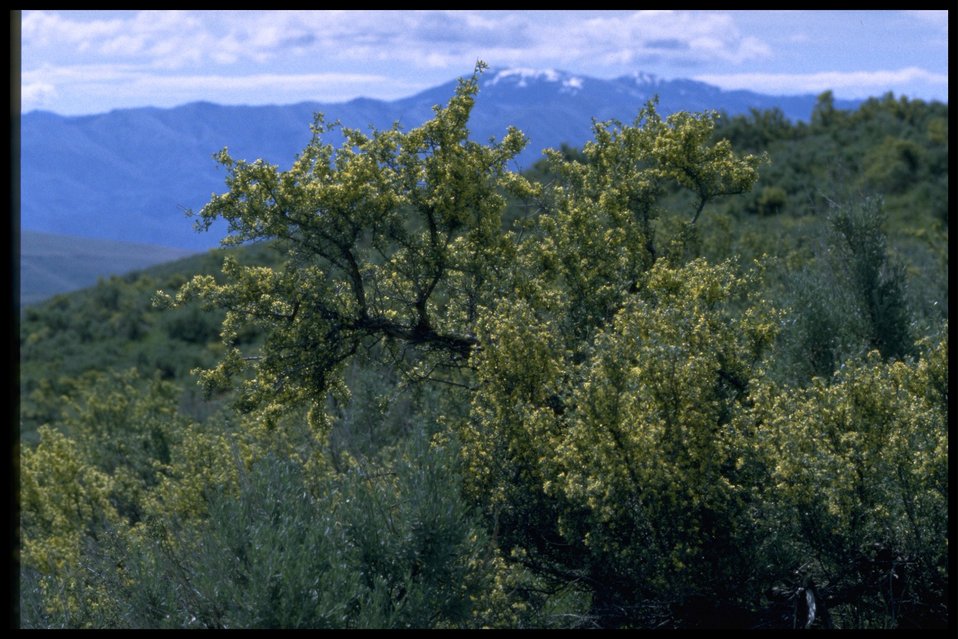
Medium shot of Bitterbrush.